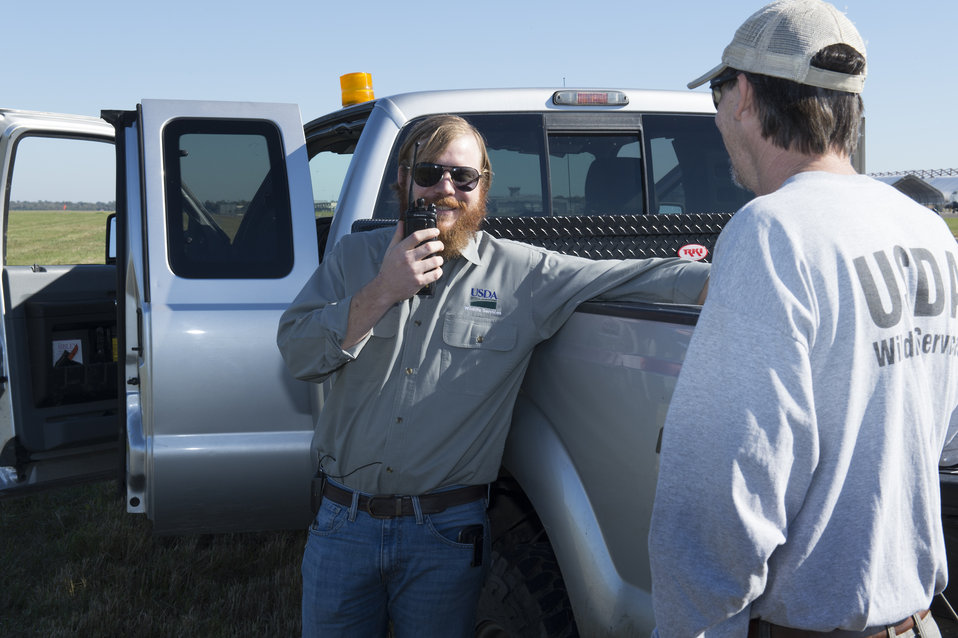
The U.S. Department of Agriculture’s (USDA) Animal and Plant Health Inspection Service (APHIS) Wildlife Services (WS) assists with the humane removal of animals from the Naval Air Station Joint Reserve Base in Belle Chase, LA on Wednesday, Nov. 20, 2013. Animals that wander onto the airstrip are dangerous to aircraft on take off and landing.